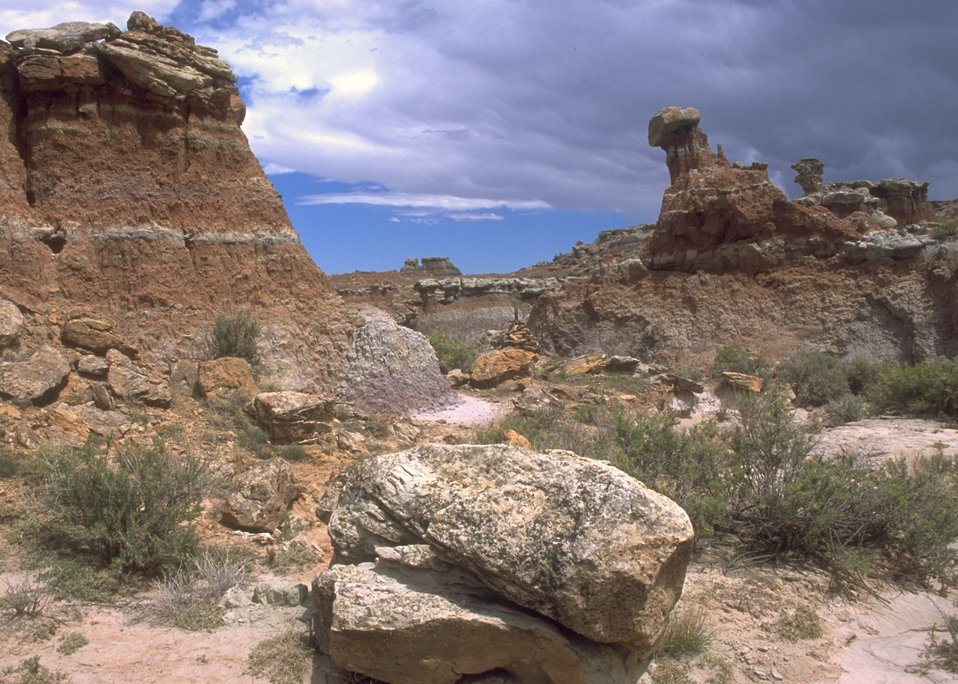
Gooseberry Interpretive Area, Worland Field Office.